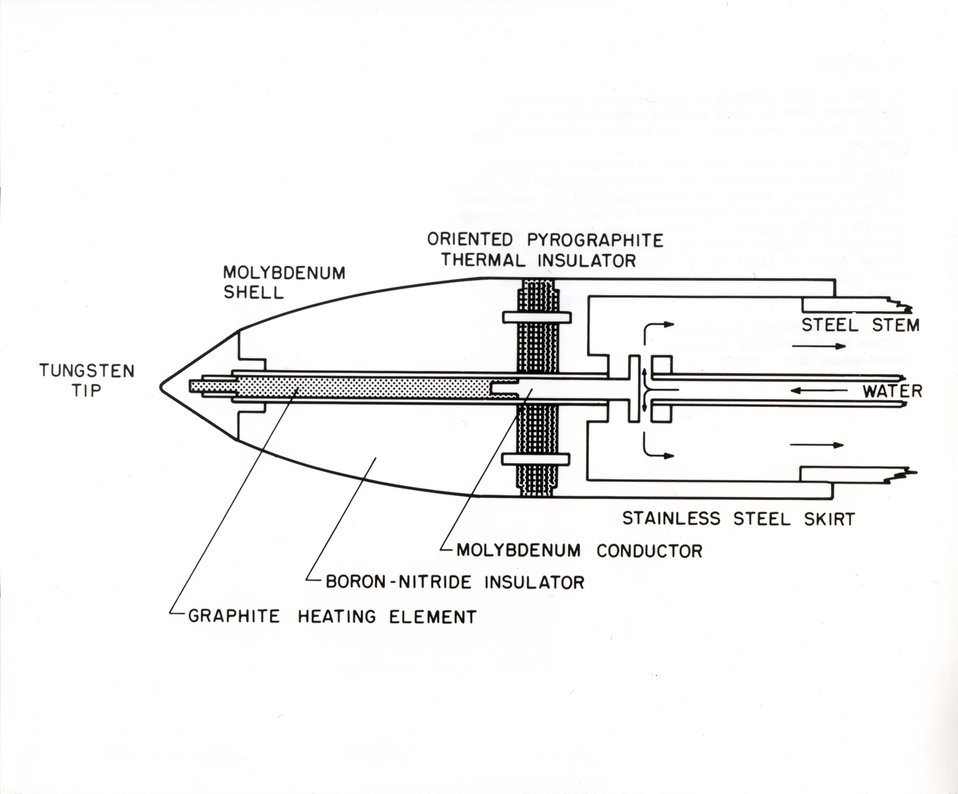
A cross section drawing of an electric subterranean penetration used in rock melting experiments at the Atomic Energy Commission's Los Alamos Scientific Laboratory. c. 1972